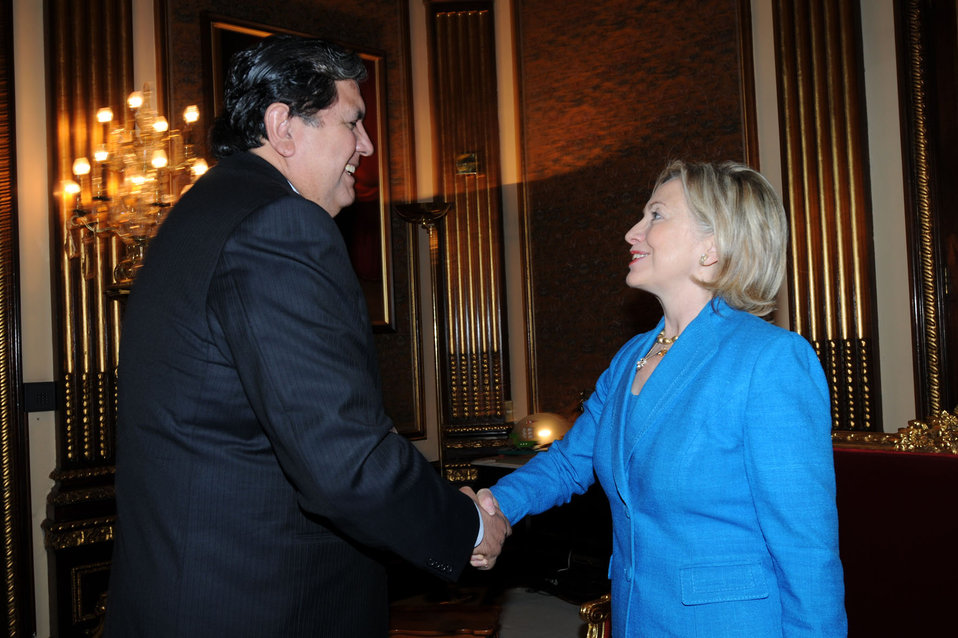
Secretary Clinton Meets With Peruvian President

U.S. Secretary of State Hillary Rodham Clinton meets with Peruvian President Alan Garcia at the Government Palace in Lima, Peru June 7, 2010.